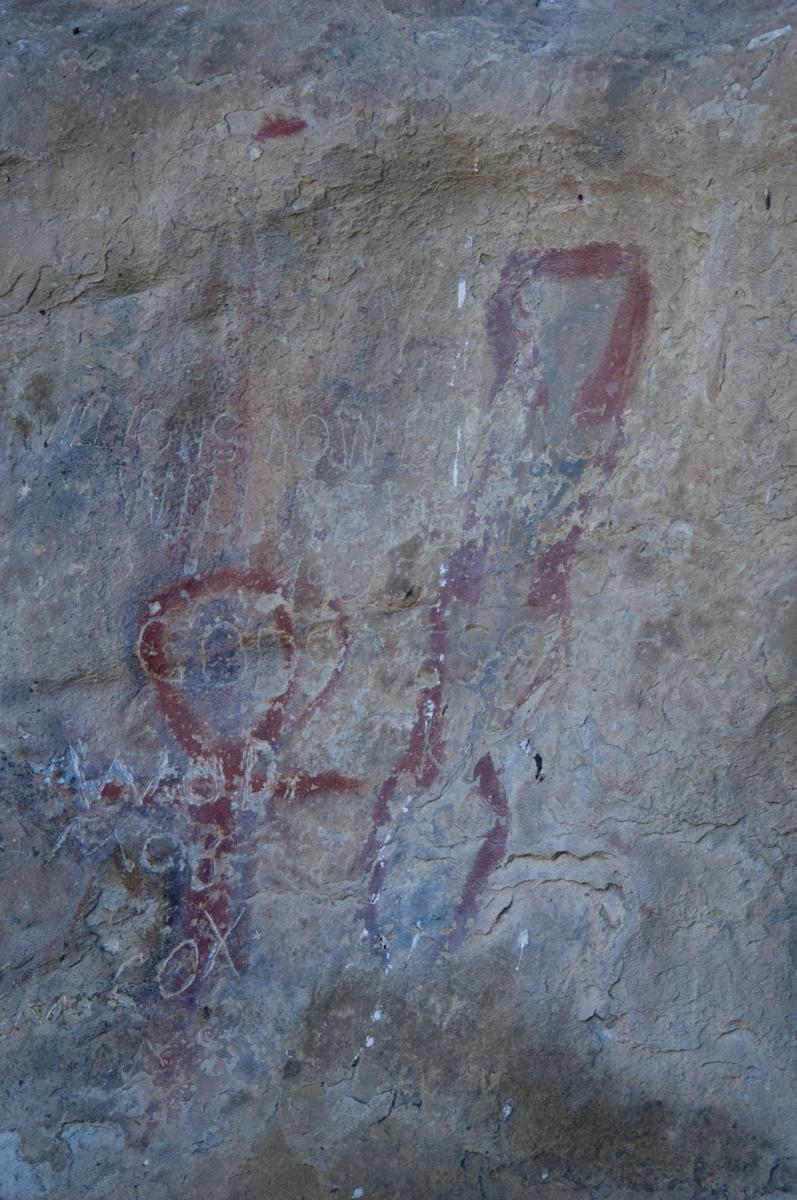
Pictograph at Painted Rock, Carrizo Plain 2